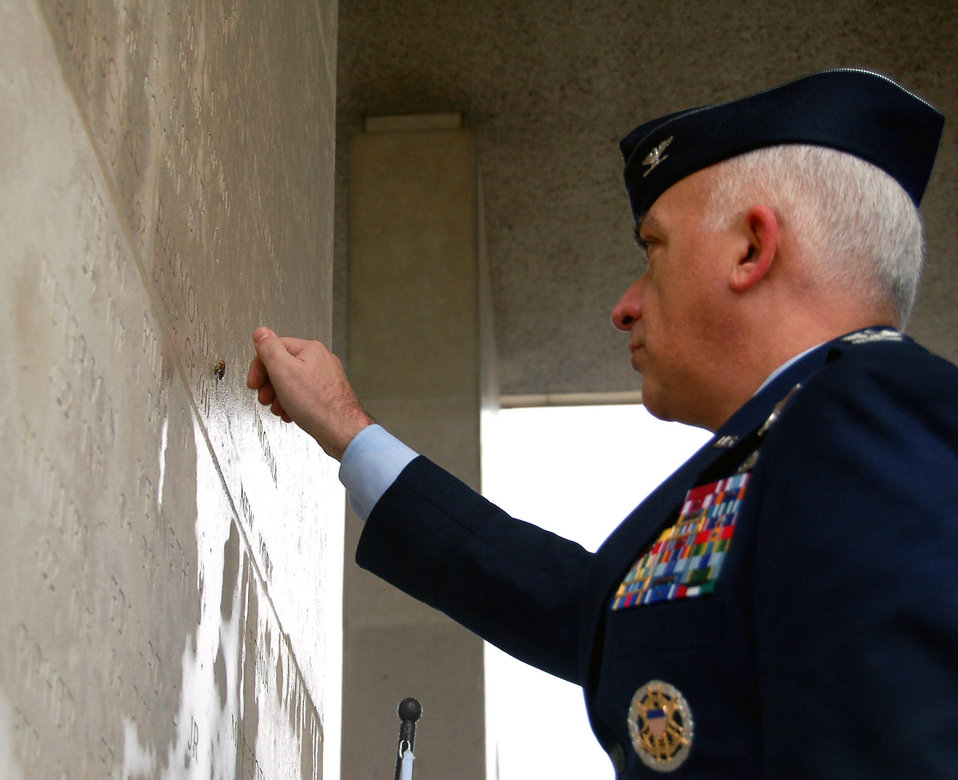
World War II MIAs recovered in Germany

Col. Mark Horn places a rosette by 1st Lt. Raymond Pascuel's name signifying he is no longer missing in action Feb. 20 at the Henri-Chapelle Cemetery and Memorial in Belgium. Lieutenant Pascuel was a New York native and one of nine men with the McMurray Crew in the Army Air Corps, who flew a B-24 bomber during World War II. Colonel Horn is the U.S. national military representative to Supreme Headquarters Allied Powers Europe.